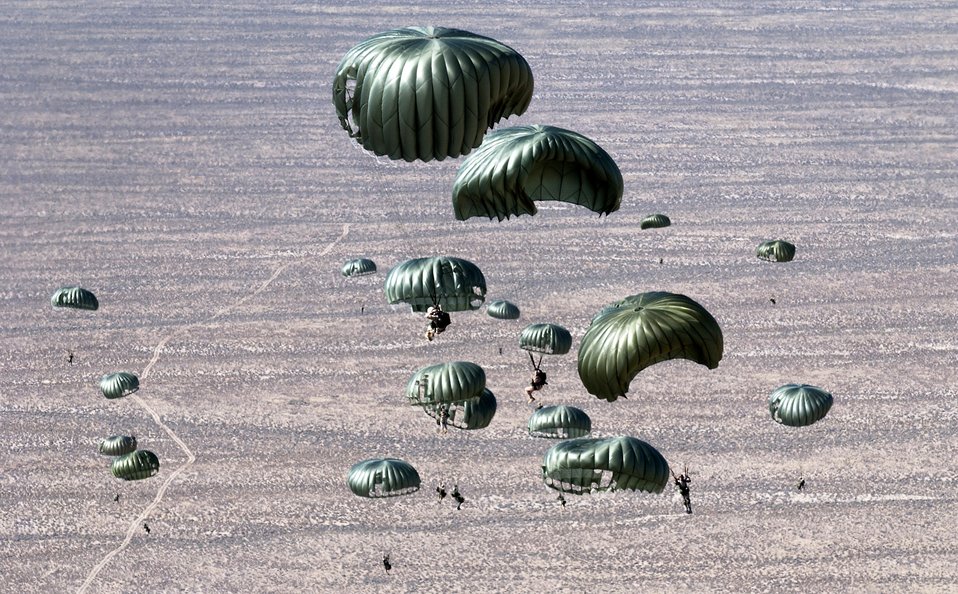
Jumping for Red Flag

Pararescuemen from the 414th Combat Training Squadron and parachutists from the 820th Red Horse Squadron from Nellis Air Force Base, Nev., jump out of a C-130 Hercules Sept. 1 over the Nevada Test and Training Ranges in support of Red Flag Exercise 06-2.